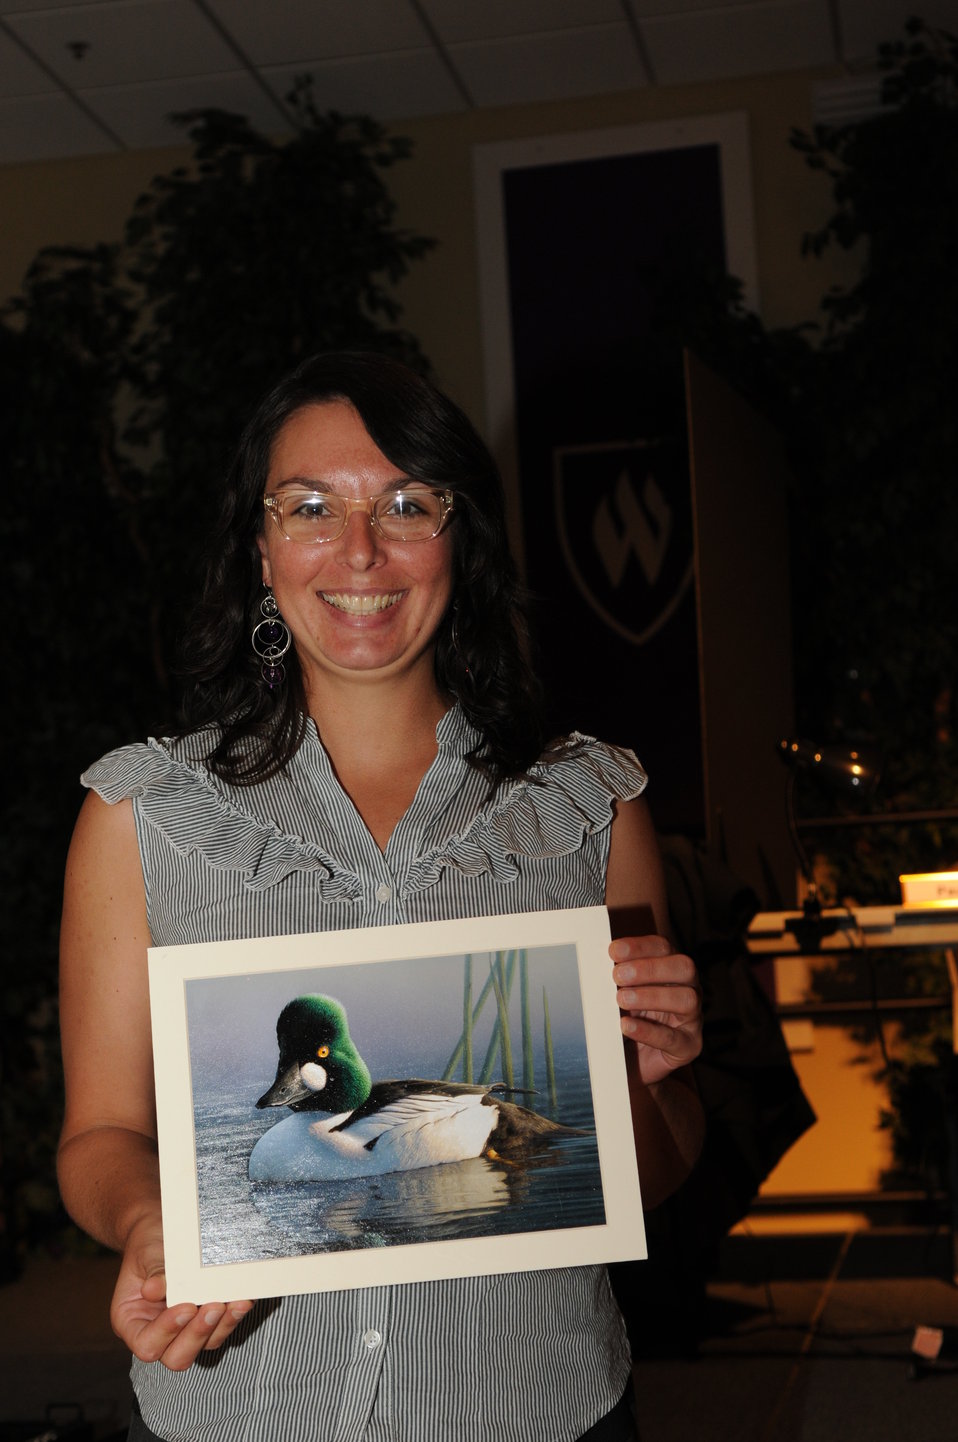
Everyone Loves a Winner

The U.S. Fish & Wildlife Service sponsored the 2012 Federal Duck Stamp Art Contest September 28 and 29 in Ogden, Utah, at Weber State University. A panel of five judges was responsible for choosing the art work used to design the 2013-2014 Migratory Bird Hunting and Conservation Stamp.